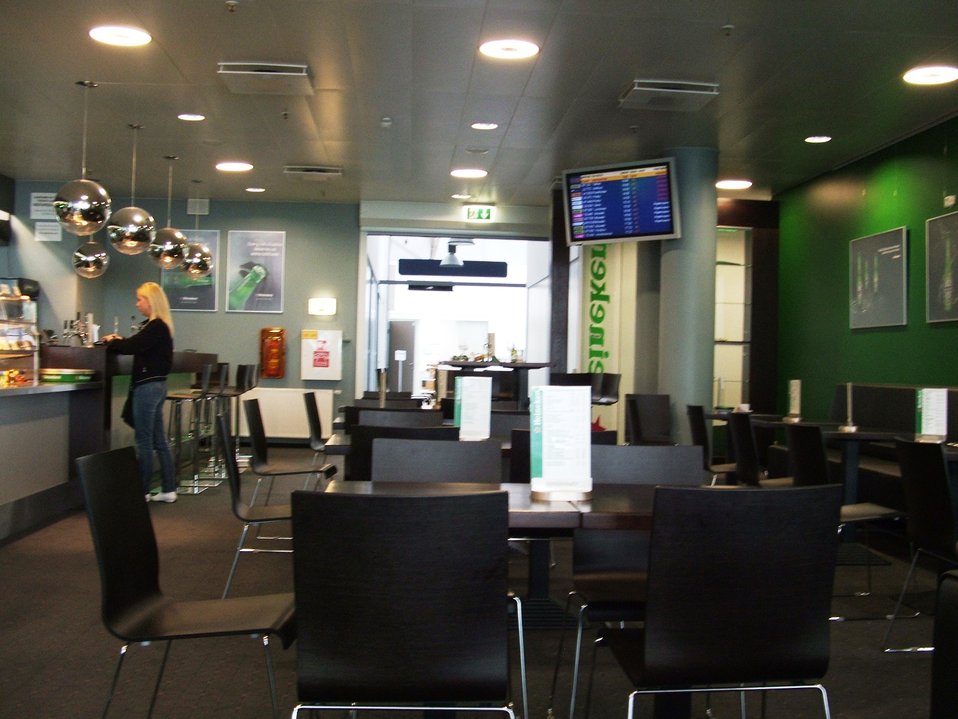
'Heineken” bar at the departure area